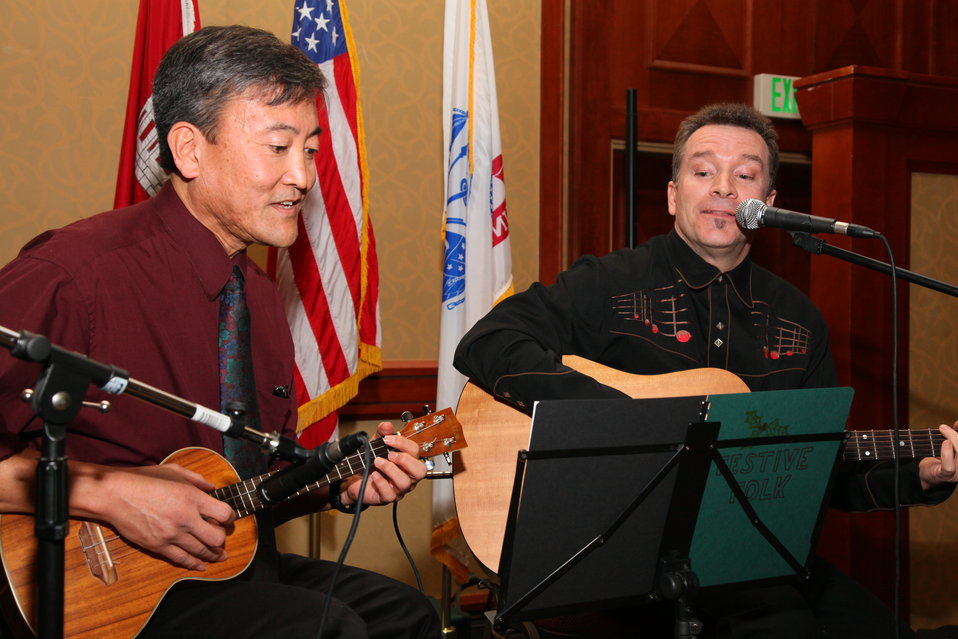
Sacramento District Holiday Party 2011